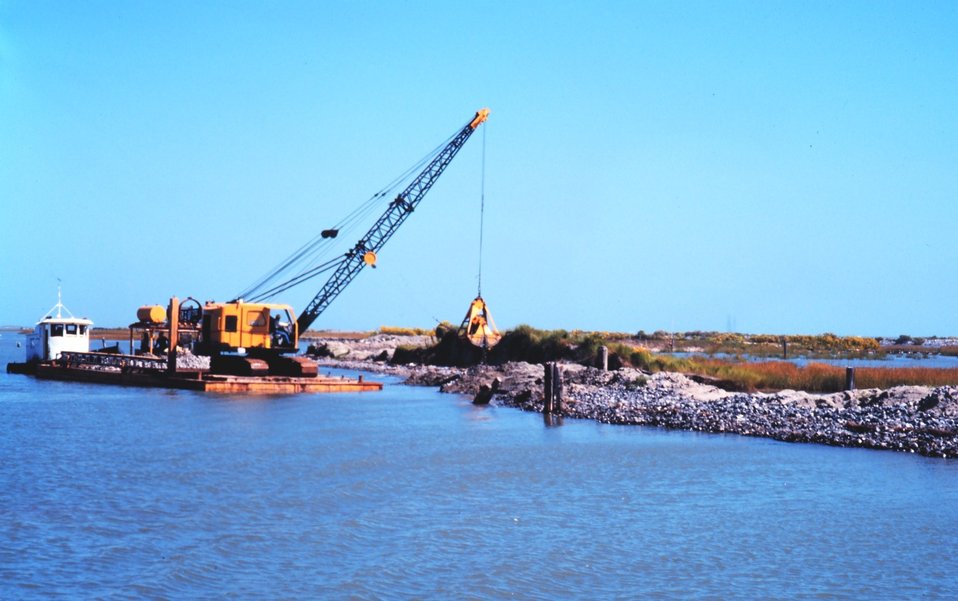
The Greenhill/East Timbalier levee maintenance